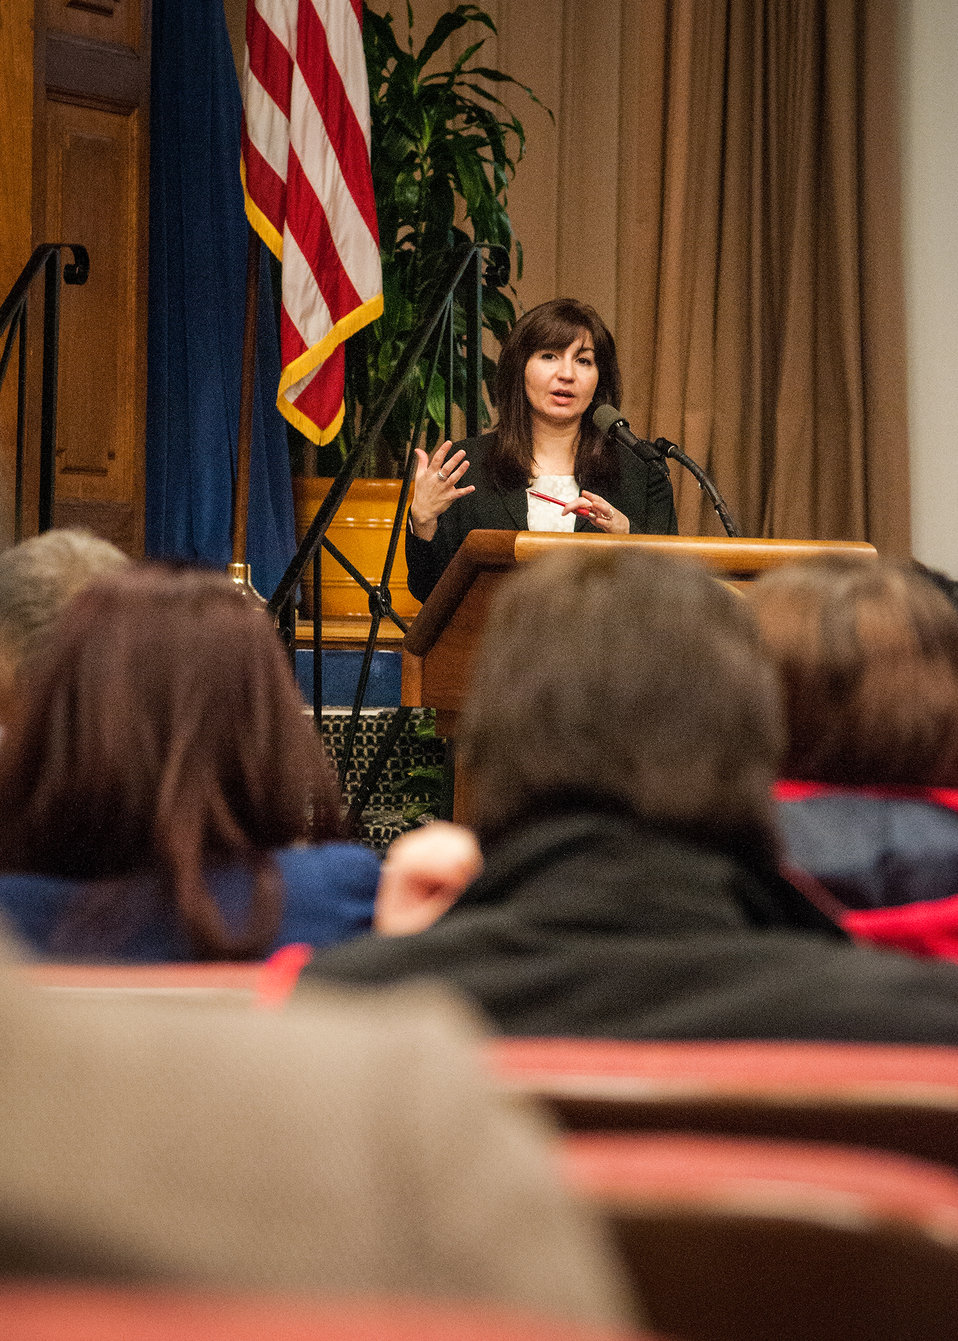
U.S. Office of Personnel Management (OPM) Office of Diversity and Inclusion Director Veronia Villalobos discusses OPM Government Wide Initiatives at the First Annual All Hands Special Emphasis Program Managers (SEPM) Meeting at the U.S. Department of Agriculture Jefferson Auditorium in Washington, D.C. on Wednesday, Mar. 13, 2013.